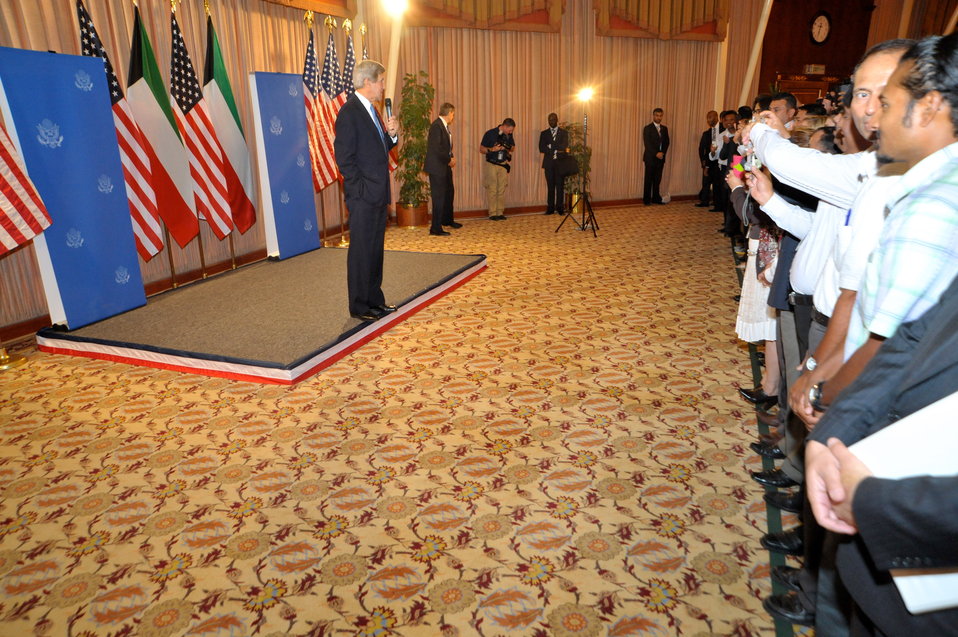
Secretary Kerry Meets With Staff of Embassy Kuwait City

U.S. Secretary of State John Kerry addresses the staff of Embassy Kuwait City, Kuwait, on June 26, 2013.